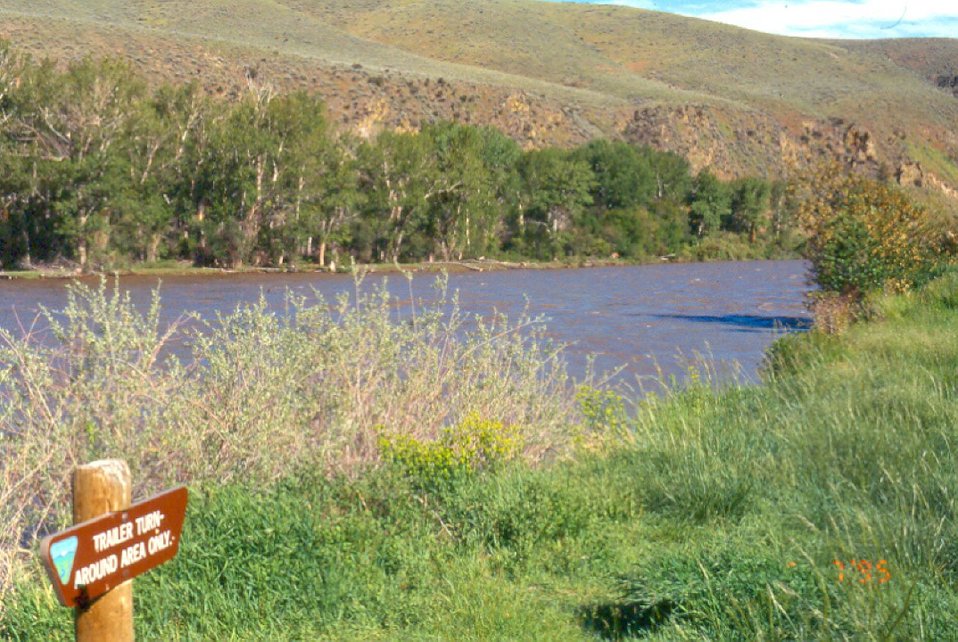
Recreation Site Sign Salmon Field Office UCSC Upper Columbia Salmon Clearwater District